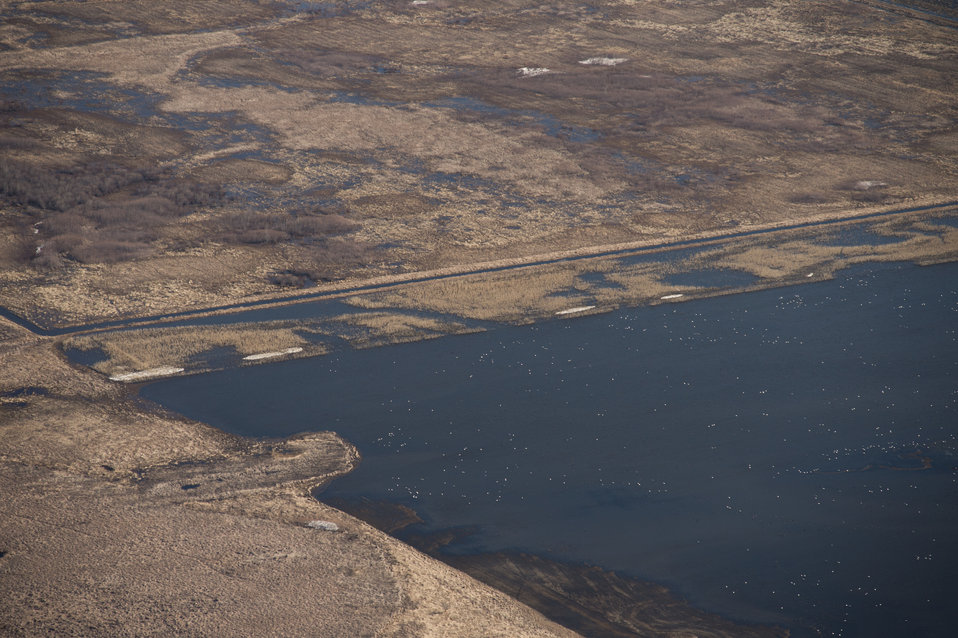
Ehlert U.S. Department of Agriculture (USDA) Natural Resources Conservation Service (NRCS) Wetland Reserve Program (WRP) in Wilkin County, MN, on Tuesday, April 30, 2013. For information about this and other programs from the USDA Red River Basin Initiative (RRBI) please see www.mn.nrcs.usda.gov/news/features13/RRBI.html.